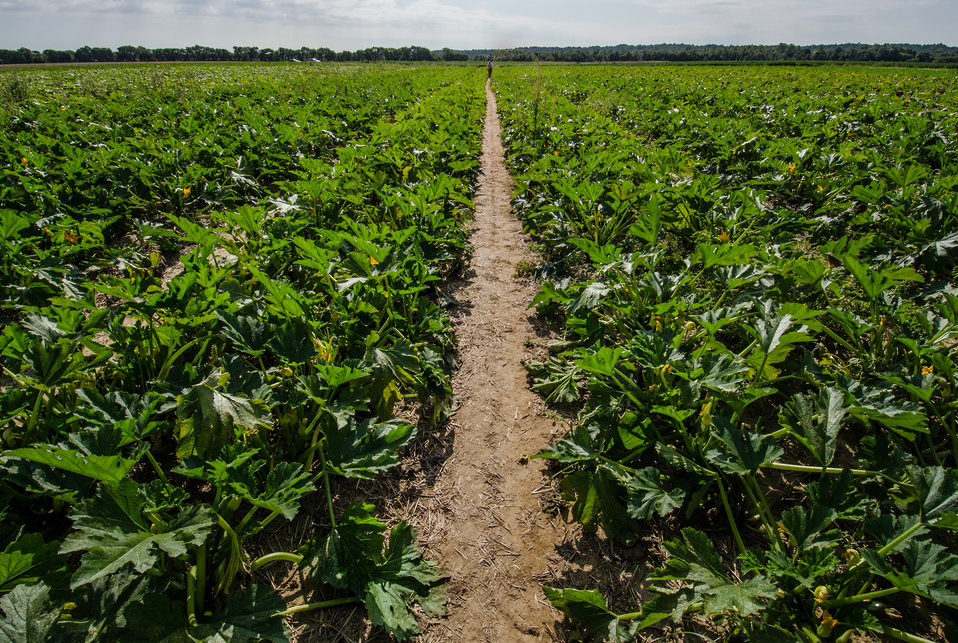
Harvested hand picked large sweet potatoes, at Kirby Farms in Mechanicsville, VA on Friday, Sept. 20, 2013. 200 acres of the farm are devoted to eggplant, spinach, beets, tomato, jalapeno peppers, melons and a variety of greens. Soybeans and small grain are grown on the remaining 300 acres. Using rotational crop practices allows Kirby Farms to double and triple crop yields. Wholesalers, who buy from this farm, sell the produce to major supermarkets in the Mid-Atlantic region, from North Carolina to Maryland. Restaurants in the local area prepare and serve the local bought produce to patrons in the Richmond, VA metropolitan area.